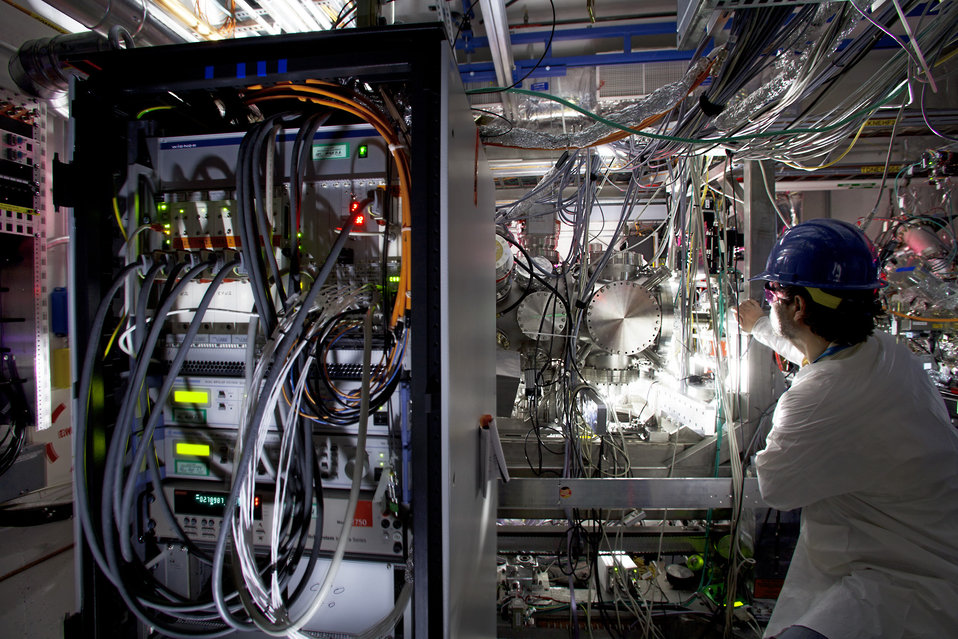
The Atomic, Molecular and Optical Science (AMO) Experimental Station at SLAC's Linac Coherent Light Source Facility.

The AMO was the first of 6 experiments to come online when the LCLS turned on in 2009. AMO researchers study the behavior and properties of matter on the level of individual atoms and molecules.